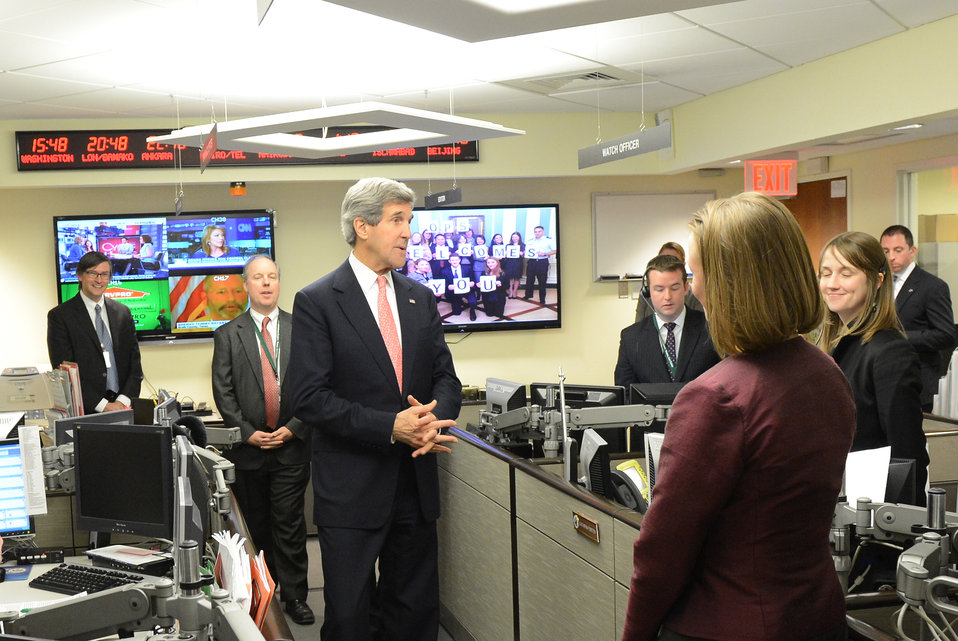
Secretary Kerry Tours the Ops Center

U.S. Secretary of State John Kerry tours the Operations Center at the U.S. Department of State in Washington, D.C., February 4, 2013.